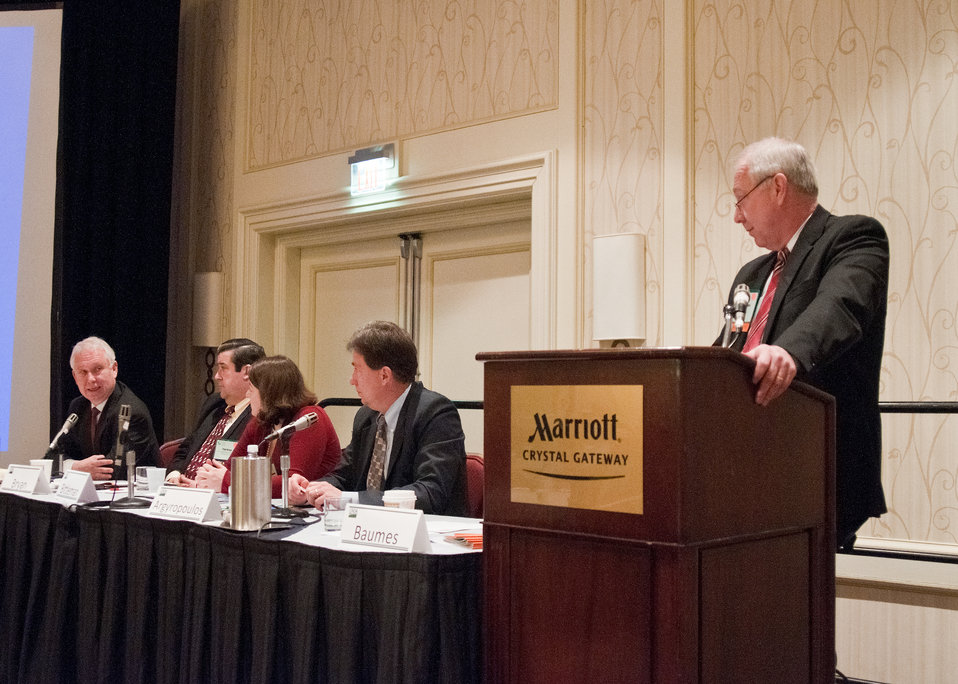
From left: Jerry Hagstrom, The Hagstrom Report, Paul Bryan, Biomass Program Manager, U.S. Department of Energy, Sarah Bittleman, Senior Advisor on Energy, U.S. Department of Agriculture, Paul Argyropoulos, Senior Policy Advisor, Office of Transportation and Air Quality, U.S. Environmental Protection Agency and Harry Baumes, Director, Office of Energy Policy and New Uses, Office of the Chief Economist, U.S. Department of Agriculture discuss Renewable Energy Policy Perspectives at the World Agricultural Outlook Board Forum in Crystal City, VA, February 25, 2011.